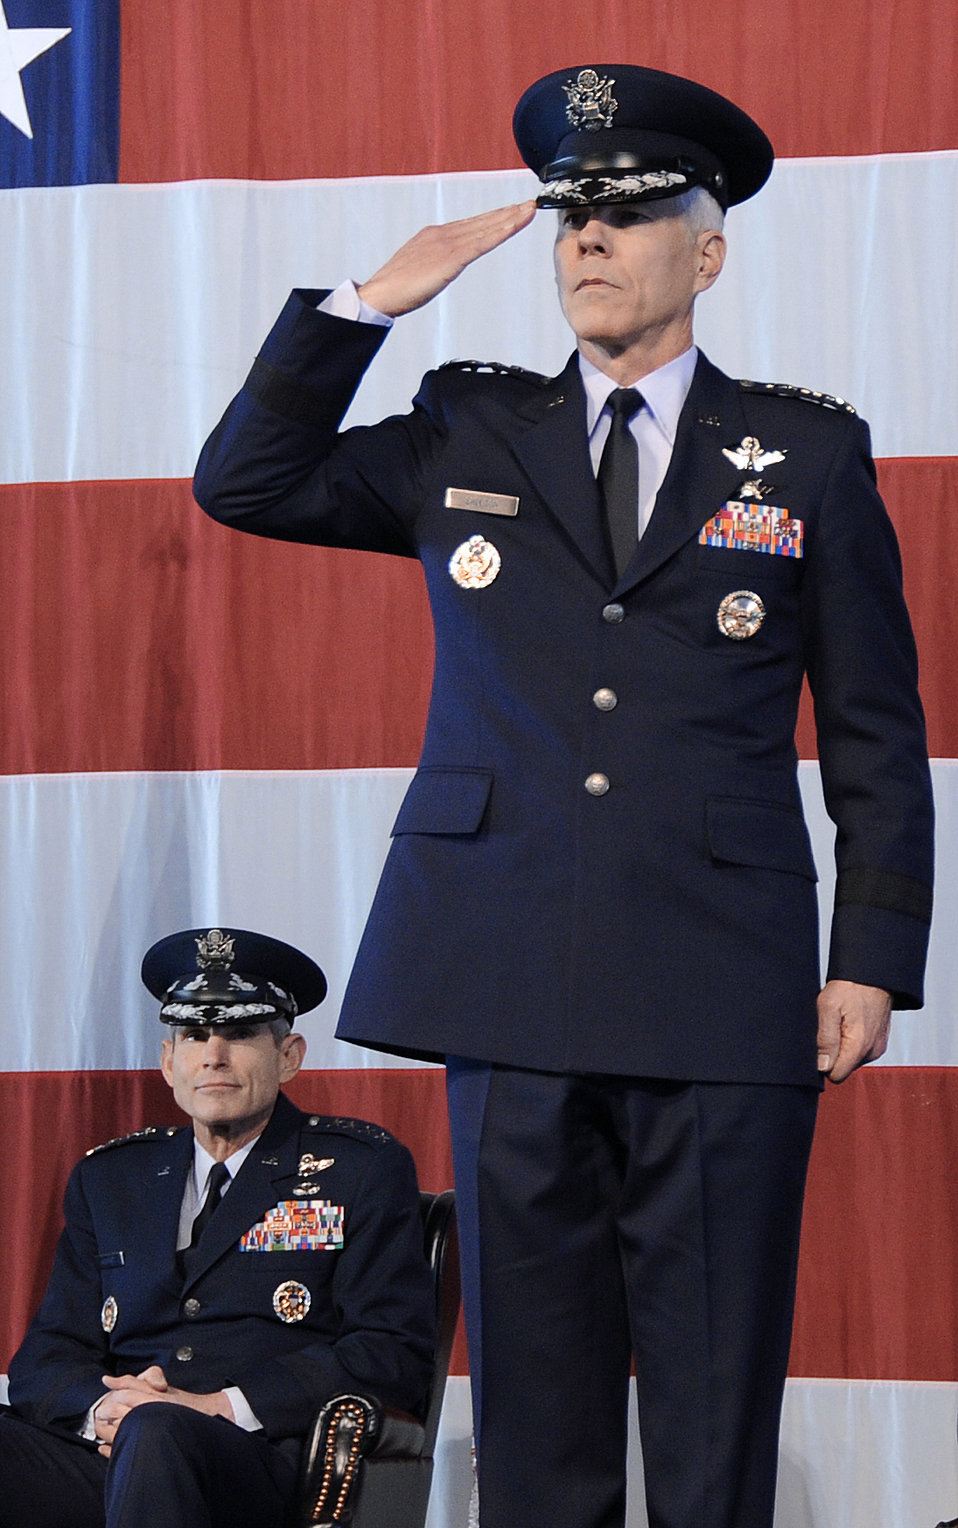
AFSPC commander

Gen. William L. Shelton receives his first salute from the men and women of Air Force Space Command upon becoming the 15th commander of AFSPC in a ceremony Jan. 5, 2011, at Peterson Air Force Base, Colo.